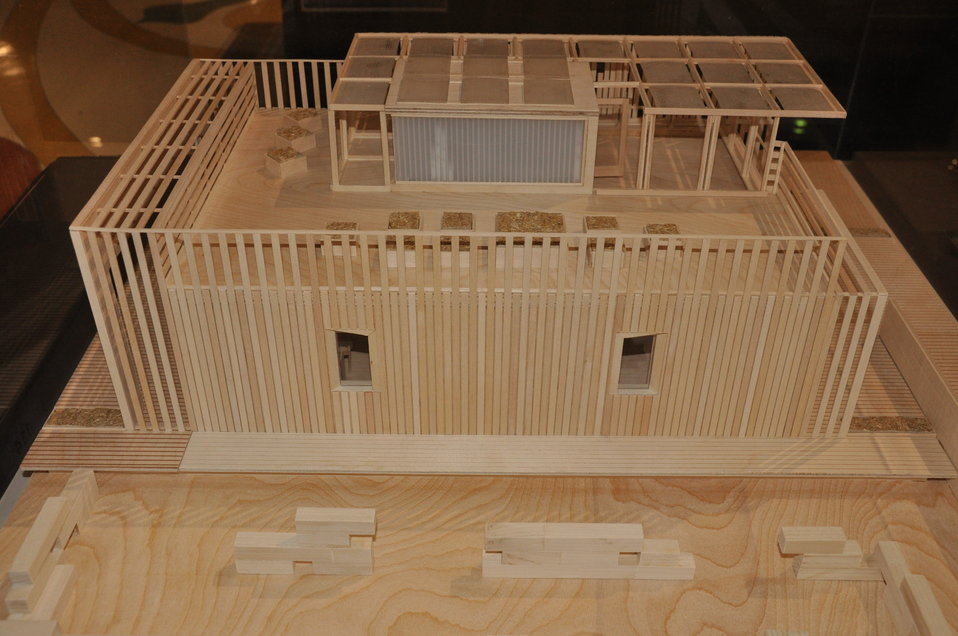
Parsons The New School for Design and Stevens Institute of Technology